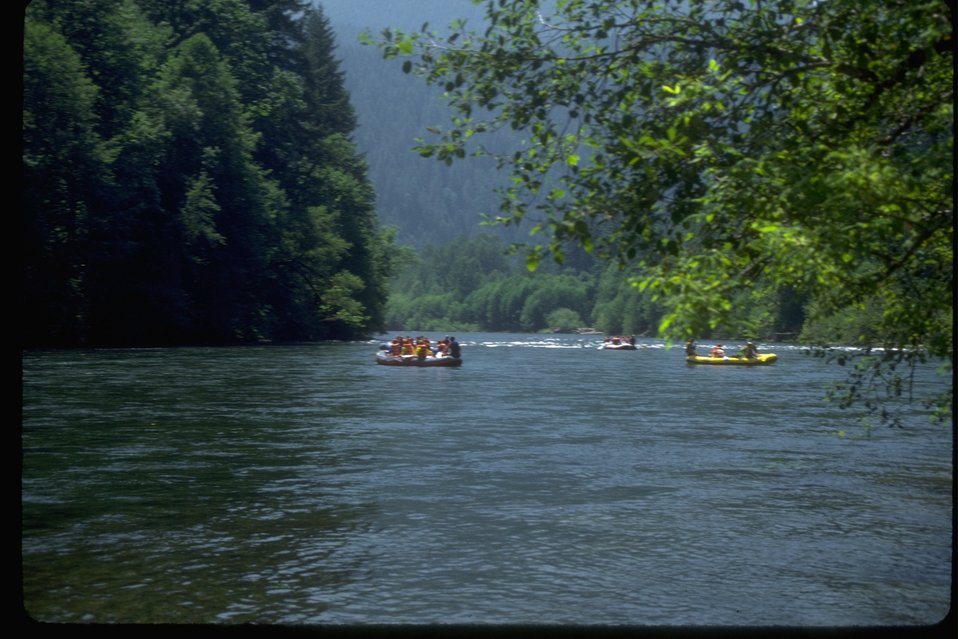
Rafting on the McKenzie River.